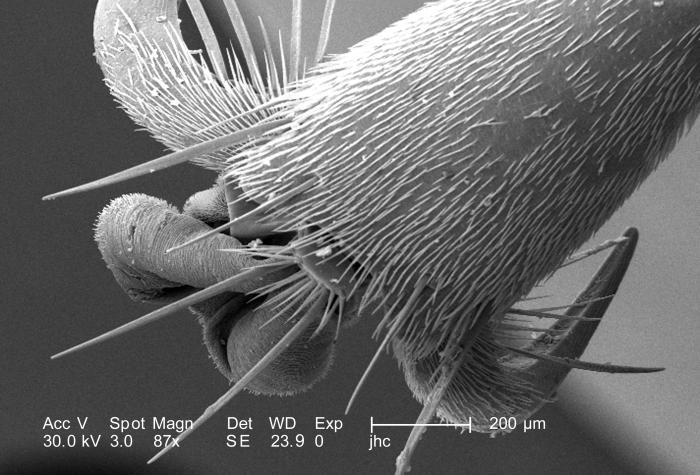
This scanning electron micrograph (SEM) is the second in a series of five PHIL images, 10106, 10107, 10108, 10109, and 10110, depicting the distalmost exoskeletal morphology found on one of the six legs of an unidentified hornet found in the suburbs of Decatur, Georgia. Under a magnification of 87X, what this SEM reveals is the anatomical configuration of what is termed the leg's 'tarsal chain', which comprises the 'tarsus', and 'pretarsus' or 'claw'. Note the 'arolium', which is centered between the two distal claws.The insect leg is usually composed of six segments: the proximal 'coxa', which attaches the leg to the thorax, followed distally by the leg's trochanter, femur, tibia, tarsus, and pretarsus, which in some insects, as is the case of this hornet, is in the form of a 'claw'.